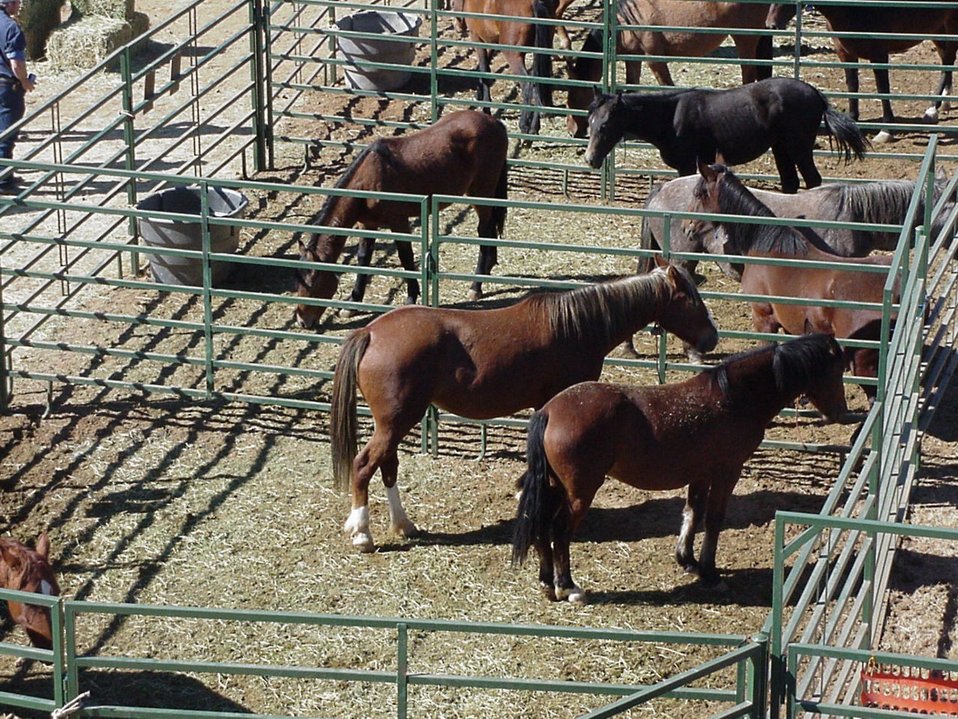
Wild horses ready to be adopted at the Wild horse and burro adoption in Camp Verde.